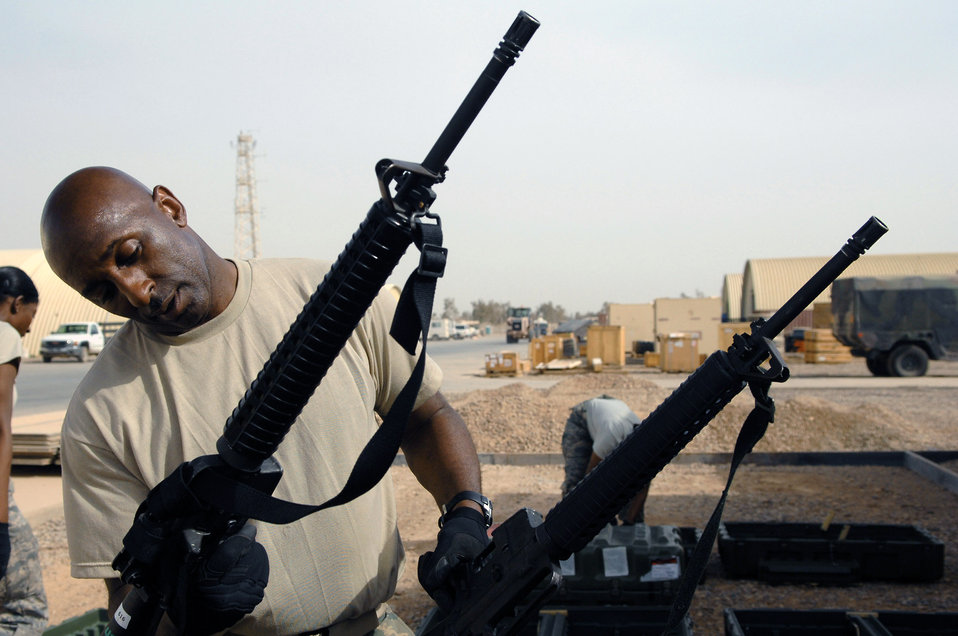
Prepositioning weapons at Balad to save $1.3 million

Master Sgt. Darryl Sterling checks the serial number on an M-16 rifle April 5 at Balad Air Base, Iraq. Balad AB has been chosen by Air Force leaders to be the test base for a weapons prepositioning initiative expected to save the Air Force approximately $1.3 million per year in transportation costs. Sergeant Sterling is the 332nd Expeditionary Logistics Readiness Squadron customer service and equipment section chief deployed from Luke Air Force Base, Ariz.